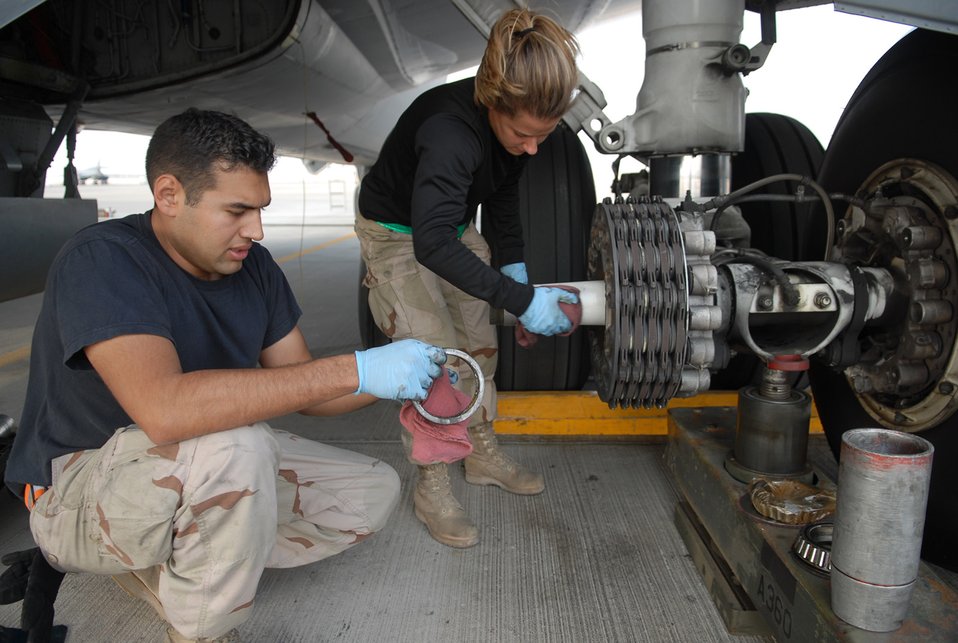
Tired

Staff Sgt. Ruben Mariscal (left) prepares a new bearing and Airman 1st Class Abigail Smith cleans the axle of a KC-135 Stratotanker Jan. 5 at a Southwest Asia air base. The two crew chiefs are with the 379th Expeditionary Aircraft Maintenance Squadron and are preparing to install a new wheel and tire on the aircraft. Sergeant Mariscal is deployed from MacDill Air Force Base, Fla., and Airman Smith is deployed from McConnell AFB, Kan.